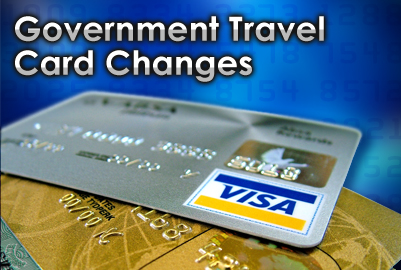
Air Force officials implement government travel card controlled spend accounts

In an effort to curtail government travel card abuse and delinquency, Air Force officials are piloting an unprecedented controlled spend account concept through Sept. 3 with an expected service-wide rollout of fall 2010.